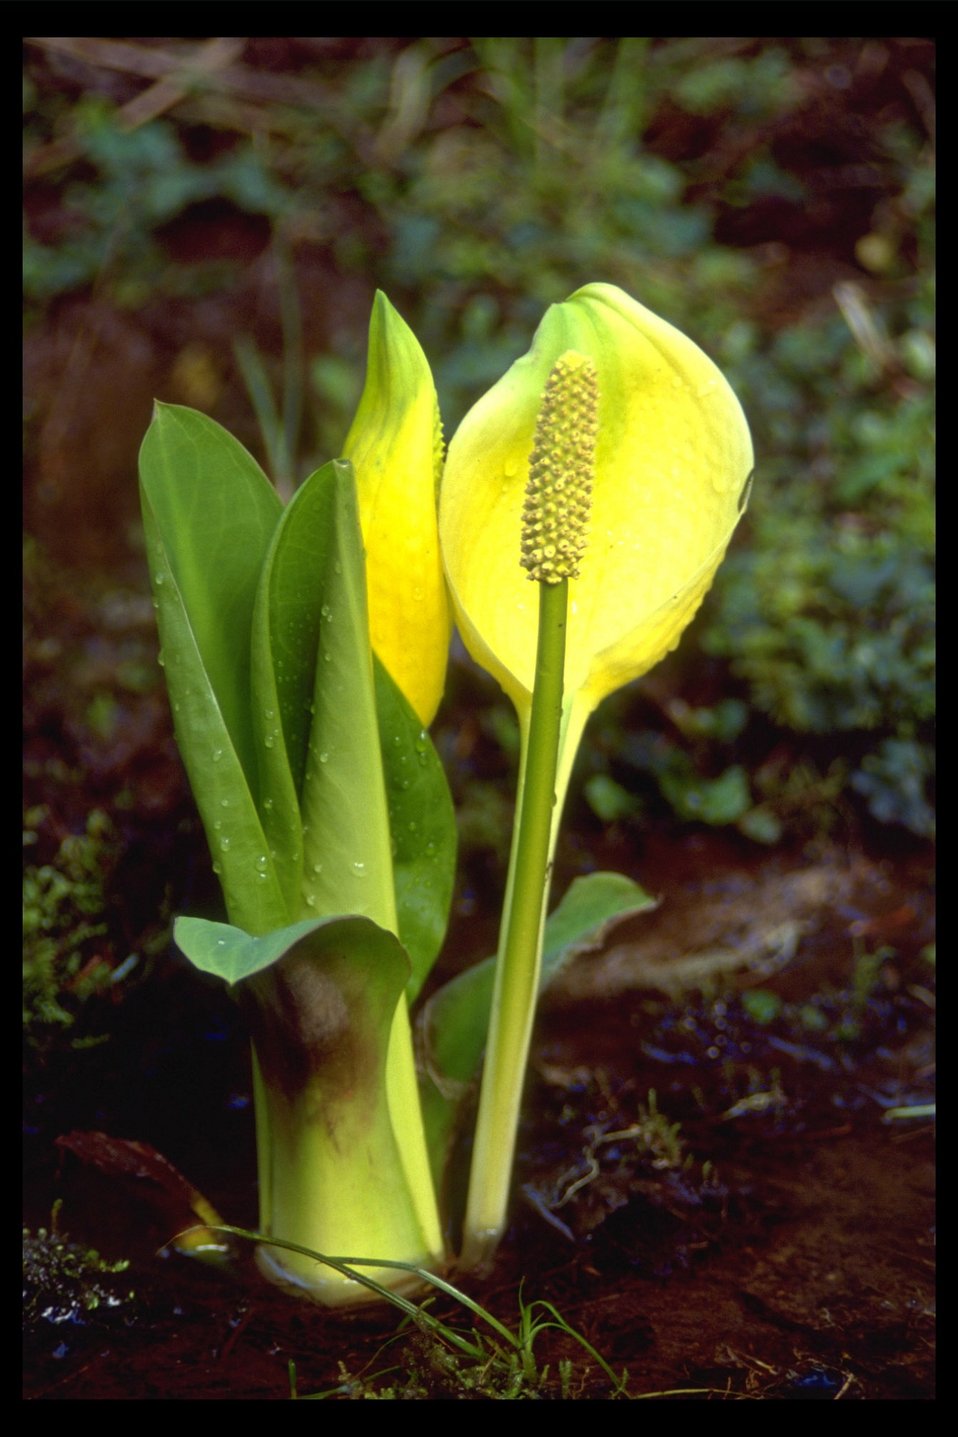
Yellow Skunk Cabbage (Lysichitum americanum) found at Three Horn Campground along Tiller Highway.